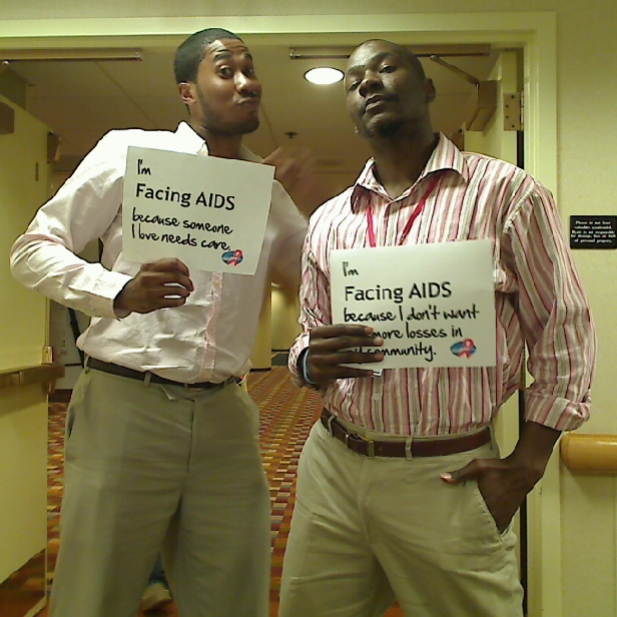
I'm Facing AIDS because someone I love needs care; I'm Facing AIDS because I don't want any more losses in my community.